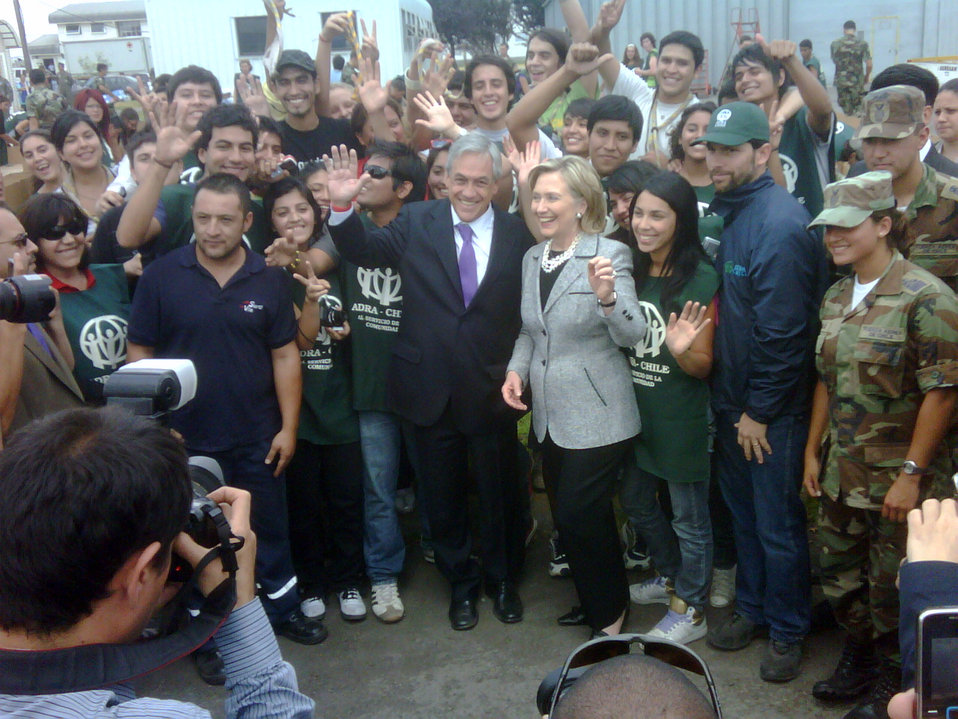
Secretary Clinton Visits Chilean Earthquake Relief Volunteers

U.S. Secretary of State Hillary Rodham Clinton visits Chilean volunteers packing boxes for earthquake victims at the airport in Santiago, Chile March 2, 2010.